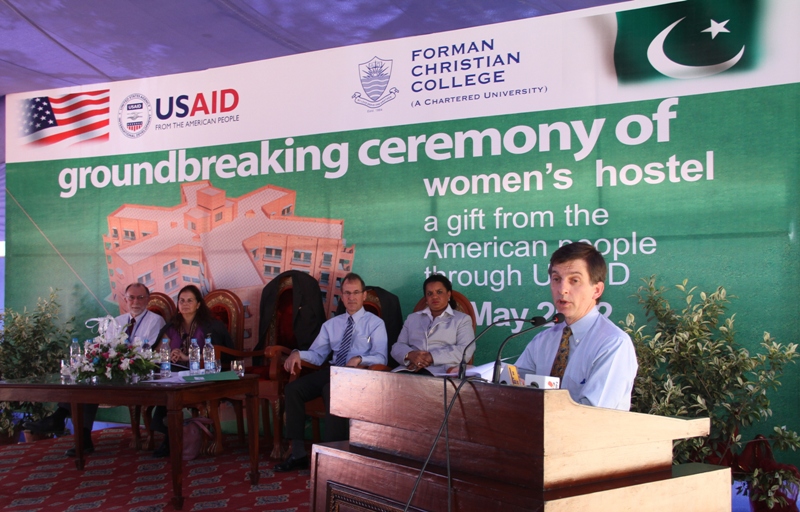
USAID Mission Director Dr. Andrew Sisson addressing the students and guests at the groundbreaking ceremony.